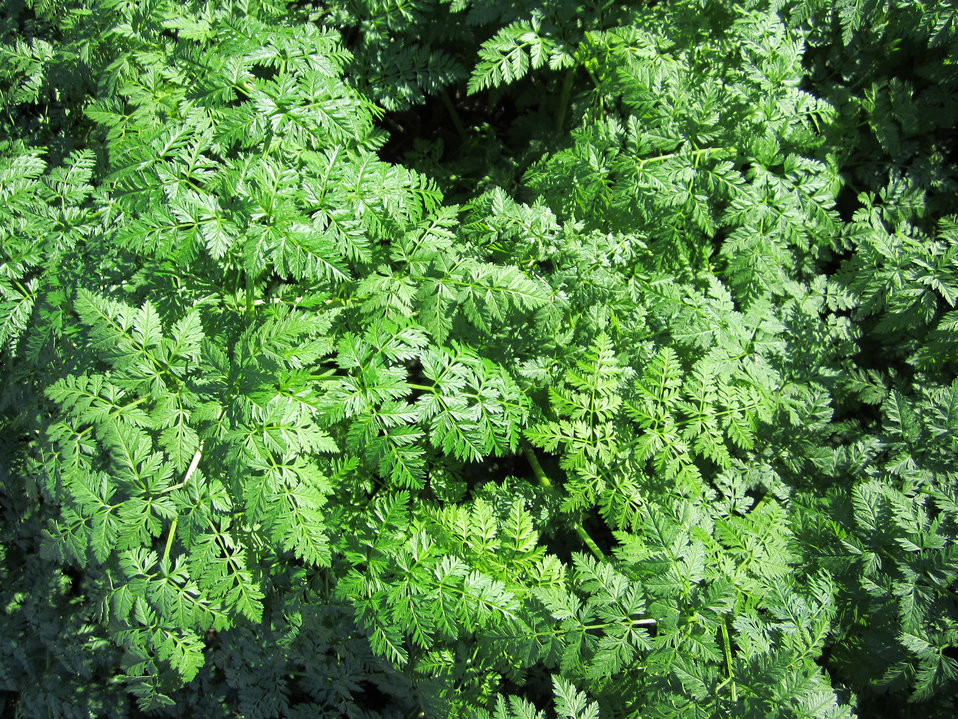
Leaves from australian bush.